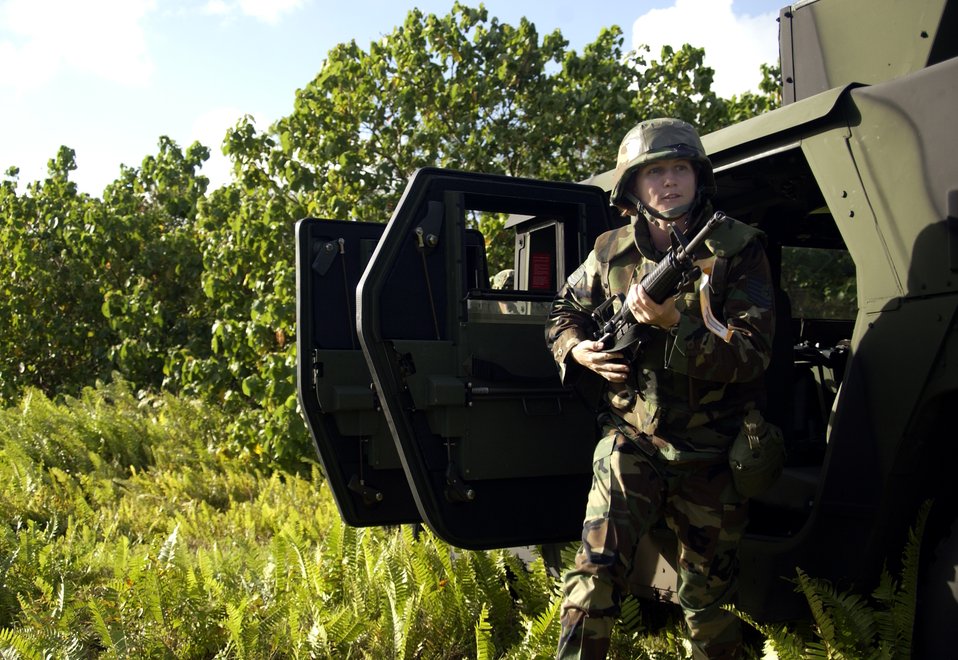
GIRRE

Tech. Sgt. Melissa Cervera participates in convoy and weapons familiarization training during the Guam Initial Readiness Response Exercise, or GIRRE, Tuesday, March 14, 2006. The GIRRE is an annual island-wide exercise between Andersen Air Force Base and Naval Marianas to train on war plan deployments and joint disaster response skills. During the GIRRE, 300 Air Expeditionary Force Airmen will participate under conditions they may see when deployed. The mission of this exercise is readiness and to prepare AEF Airmen with skills they can use to keep alive downrange while working with Navy and Government of Guam agencies on disaster response to save lives at home.